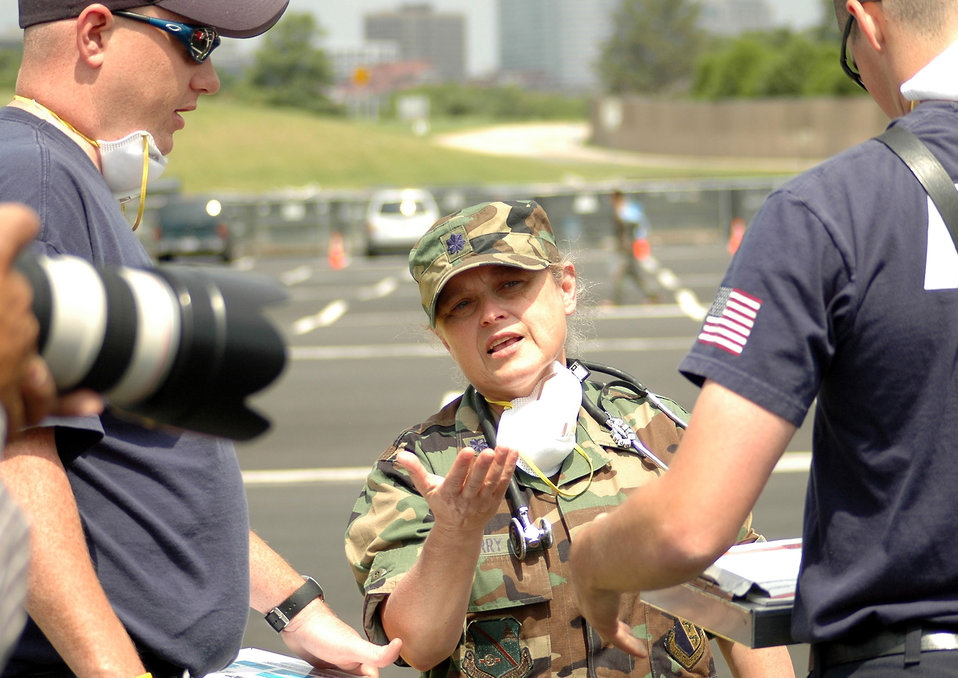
National Capitol Region first responders train for Pentagon disaster

Lt. Col. (Dr.) Marilyn D. Perry speaks with members of the Arlington County Fire Department during an exercise at the Pentagon on Wednesday, May 17, 2006. Dr. Perry acted as the on-scene medical director for the exercise. During exercise Gallant Fox 06, officials from Washington D.C. area fire, emergency medical service, and police departments; military members; and members of the Pentagon Force Protection Agency participated in the exercise, which included decontamination and medical processing of victims of a simulated anthrax attack at the Pentagon.